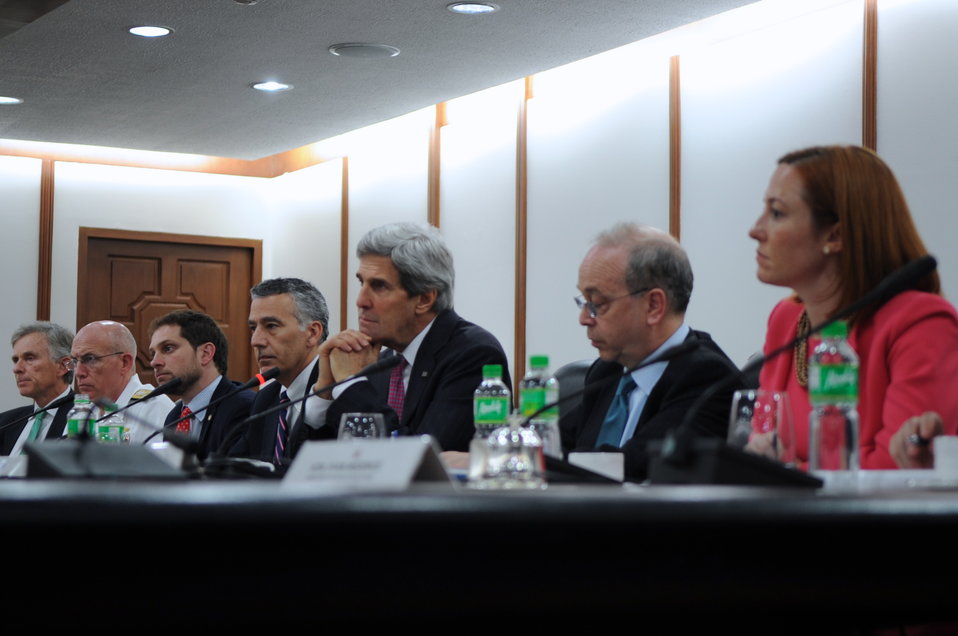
U.S. Delegation Listens to Philippine Foreign Secretary Del Rosario in Manila

U.S. Secretary of State John Kerry and his staff listen to Foreign Secretary Albert del Rosario of the Philippines speak at the outset of a meeting in Manila on December 17, 2013.